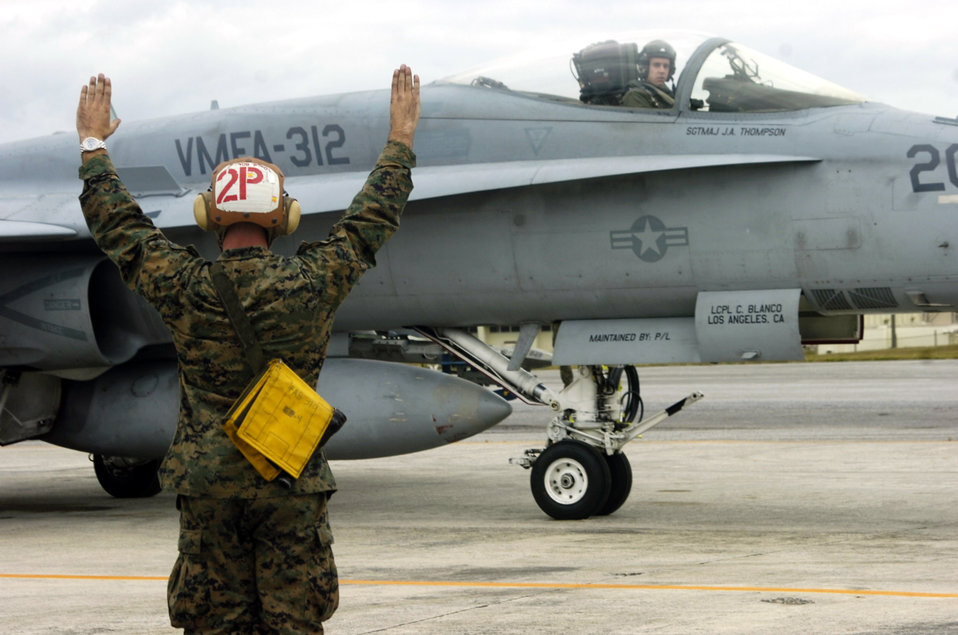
Operational readiness exercise tests Airmen, Marines

Marine Cpl. Sterling Robertson instructs pilot Capt. Olgierd Weiss with take off commands Dec. 4 at Kadena Air Base, Japan. Corporal Robertson is a powerliner for Marine Fighter Attack Squadron 212. A powerliner's job is to instruct the pilot on start up and launch out the pilot.